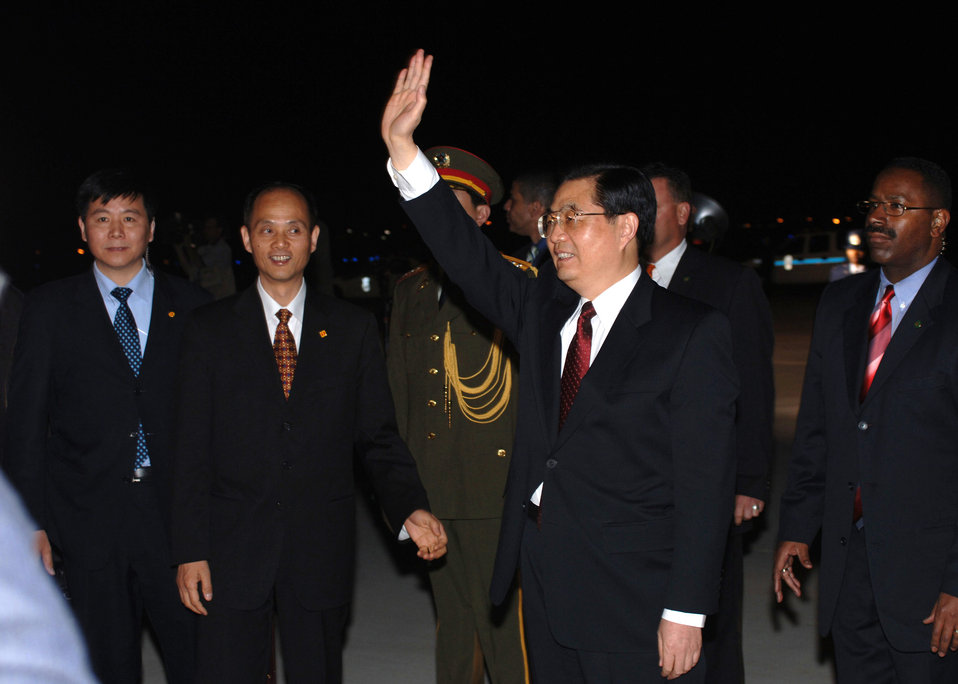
China's president visits U.S.

President Hu Jintao of China waves to the crowd after his arrival at Andrews Air Force Base, Md., Thursday, April 19, 2006.